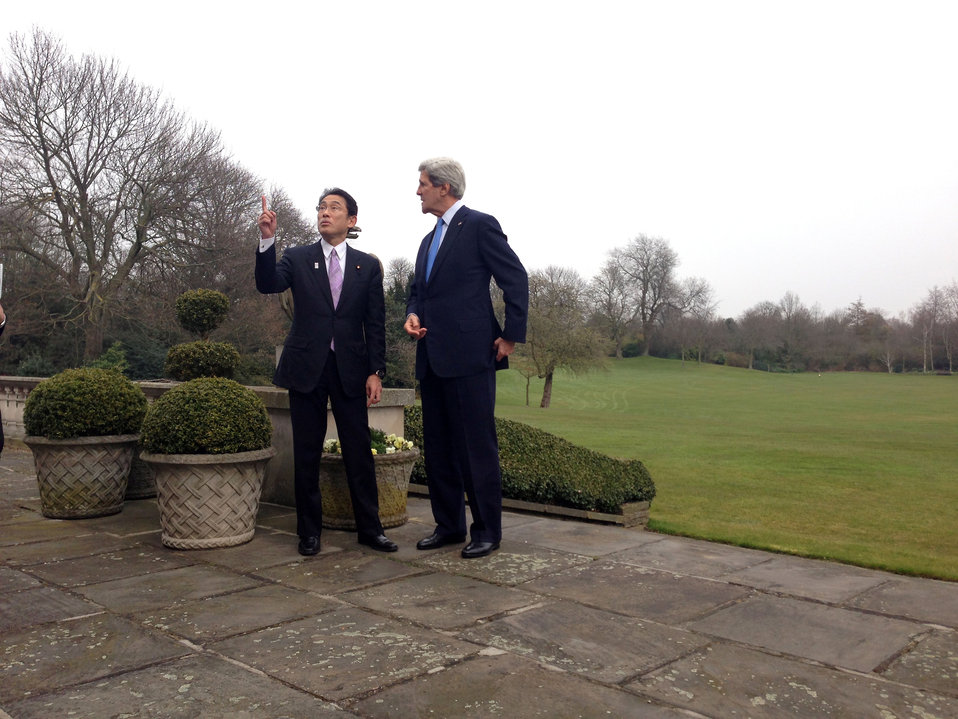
Secretary Kerry Meets With Japanese Foreign Minister Kishida

U.S. Secretary of State John Kerry meets with Japanese Foreign Minister Fumio Kishida at the Winfield House, the residence of the U.S. Ambassador, in London, United Kingdom, April 10, 2013.